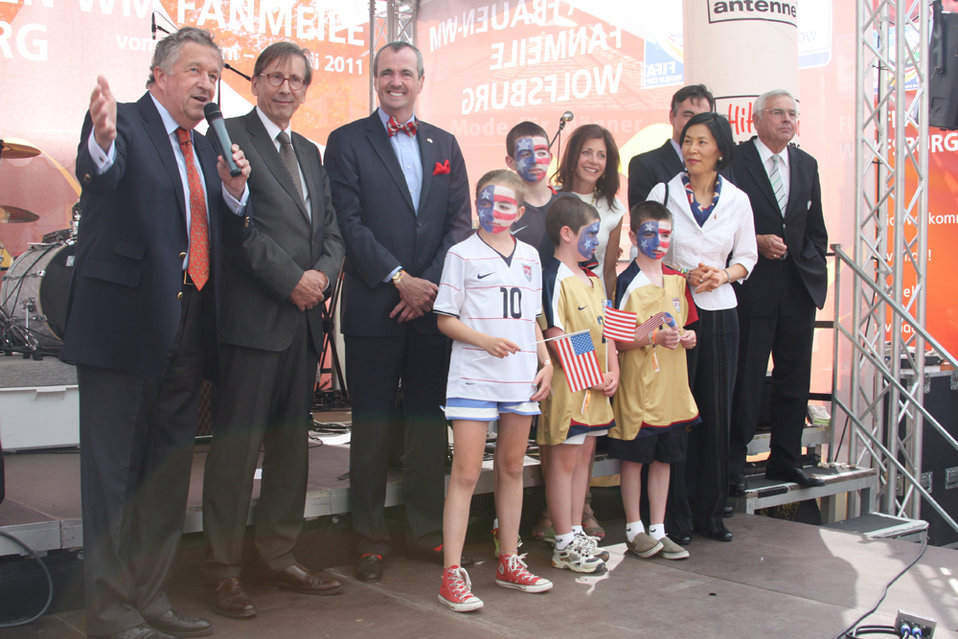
Lord Mayor of Wolfsburg Professor Schnellecke, Swedish Ambassador Carlsson, Ambassador Murphy and His Family, Consul General Patterson, Minister President McAllister, and Vice President of the German Soccer Federation Karl Rothmund Address Fans

Lord Mayor of Wolfsburg Professor Schnellecke, Swedish Ambassador Carlsson, U.S. Ambassador to Germany Philip D. Murphy and his family, Consul General Patterson, Minister President McAllister, and vice president of the German Soccer Federation Karl Rothmund address American and Swedish fans at the “Fanmeile” in Wolfsburg, Germany, on July 6, 2011.